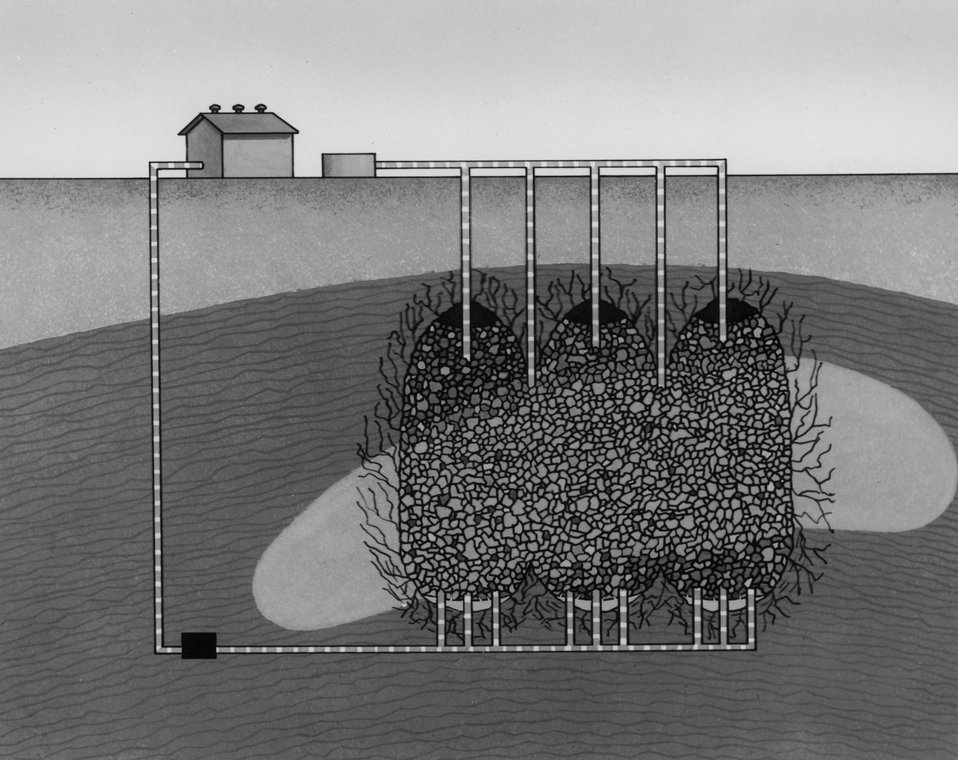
Artist's concept of situ (in place) chemical leaching of a body of ore broken by three completely contained underground nuclear explosions. c. 1966